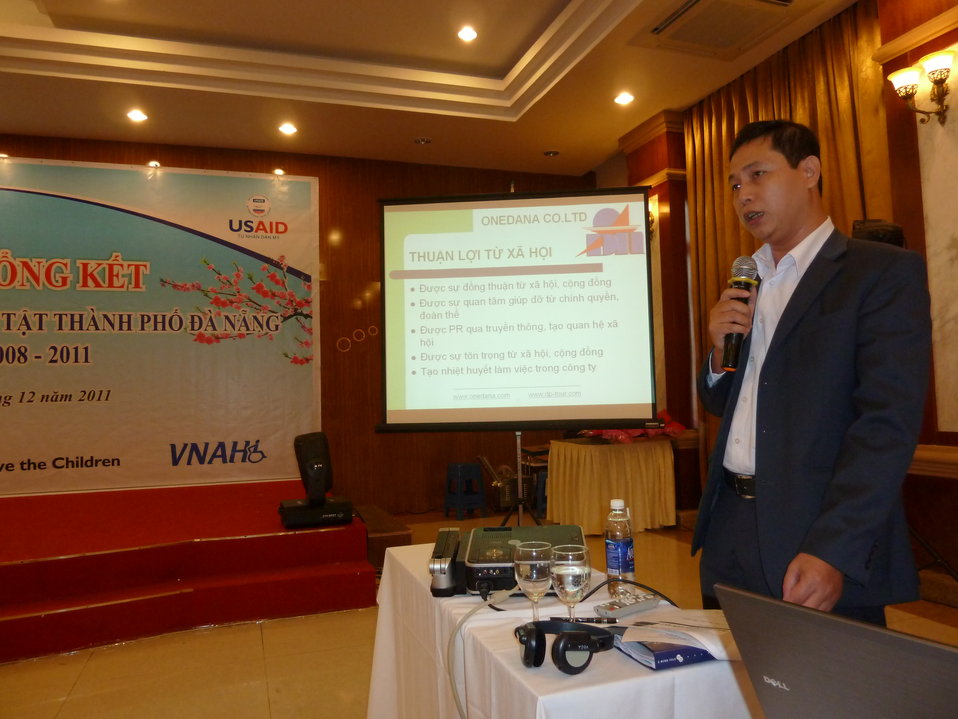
Danang Disability Workshop

Close out workshop of three-year USAID program in disabilities, Danang